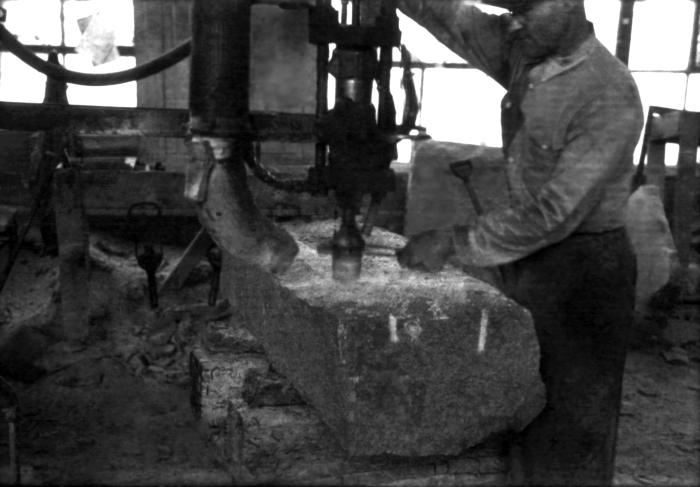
This October 1947 photograph was provided by the Center for Disease Control's (CDC), National Institute for Occupational Safety and Health (NIOSH). The image depicted a stonecutter who was carving a granite gravestone with a powered drill sander inside a Kansas workshop. Even though the worker was wearing eyeglasses, which offered a modicum of vision protection, he was not wearing any barrier to dust that may be inhaled, such as a filtered breathing apparatus. Workers like this mason, can be exposed to potential respiratory health hazards as well as other physical injuries when working in the stone cutting and quarrying industries.